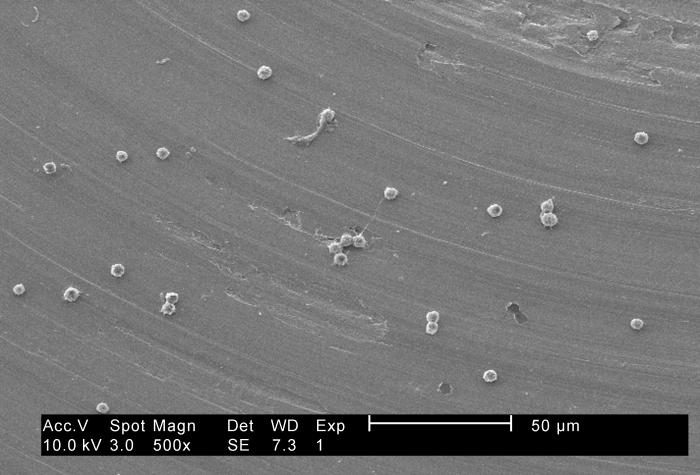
Under a low magnification of 500X, this 2002 scanning electron micrograph (SEM) revealed some of the ultrastructural morphology exhibited by a number of Hartmannella vermiformis amoebae trophozoites.